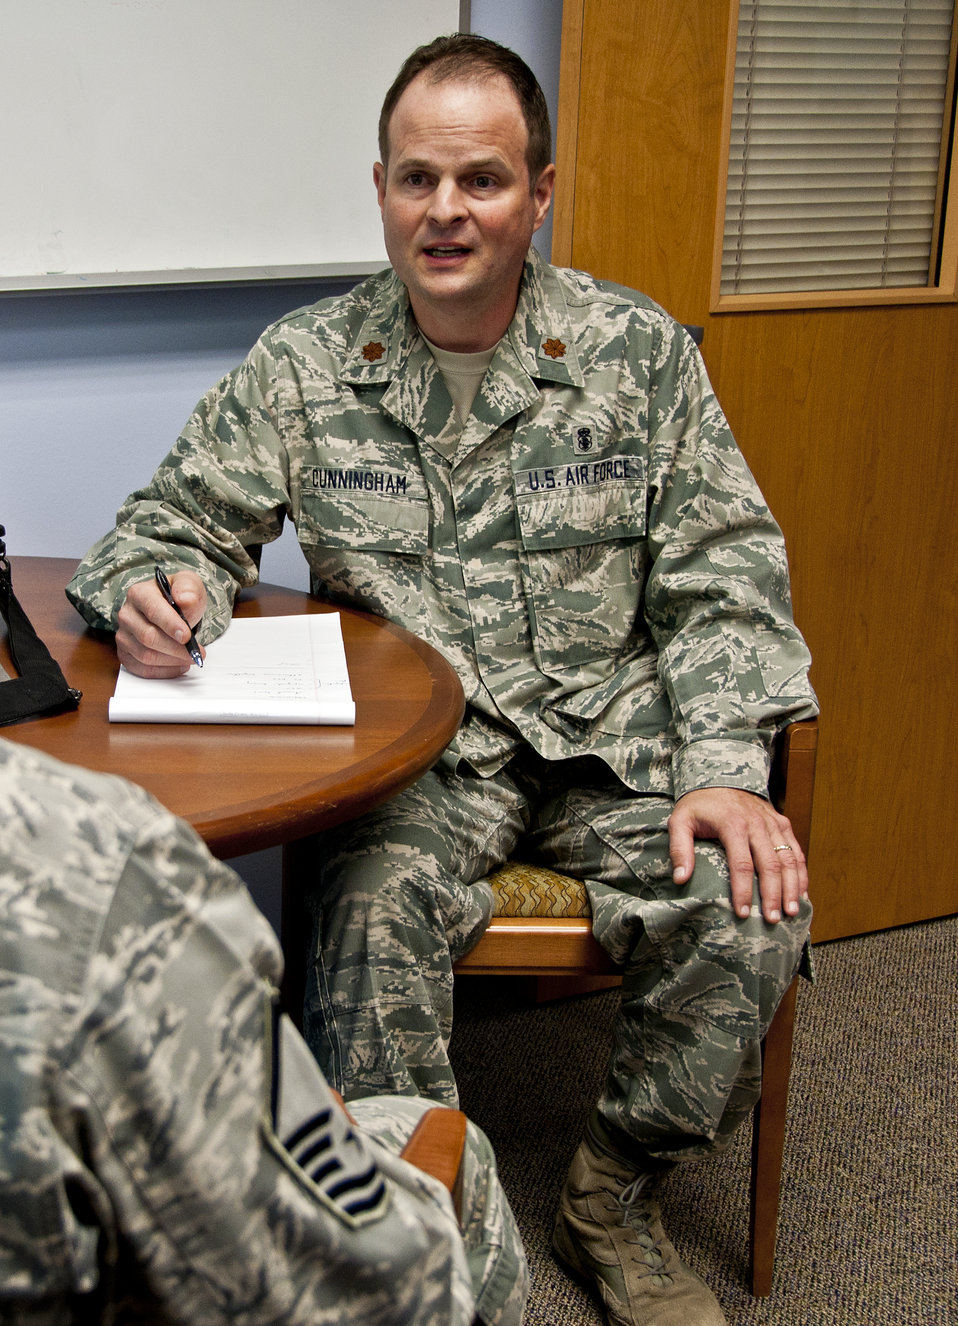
Mental health nurse

Maj. Brian Cunningham provides ongoing active support to the 446th Airlift Wing through assessment & support of airmen identified through post-deployment and annual screening with mental health concerns. Cunningham is also a mental health nurse with the 446th Aeromedical Staging Squadron at McChord Field, Wash., and the Veterans Administration in Ogden, Utah.